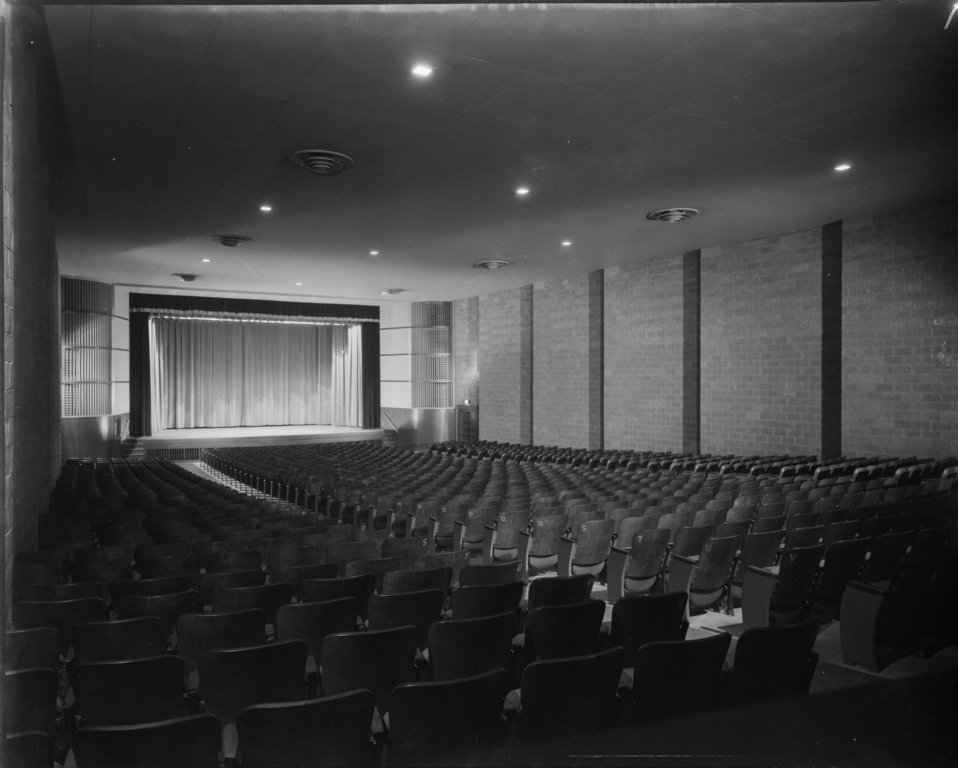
Business activity at Oak Ridge